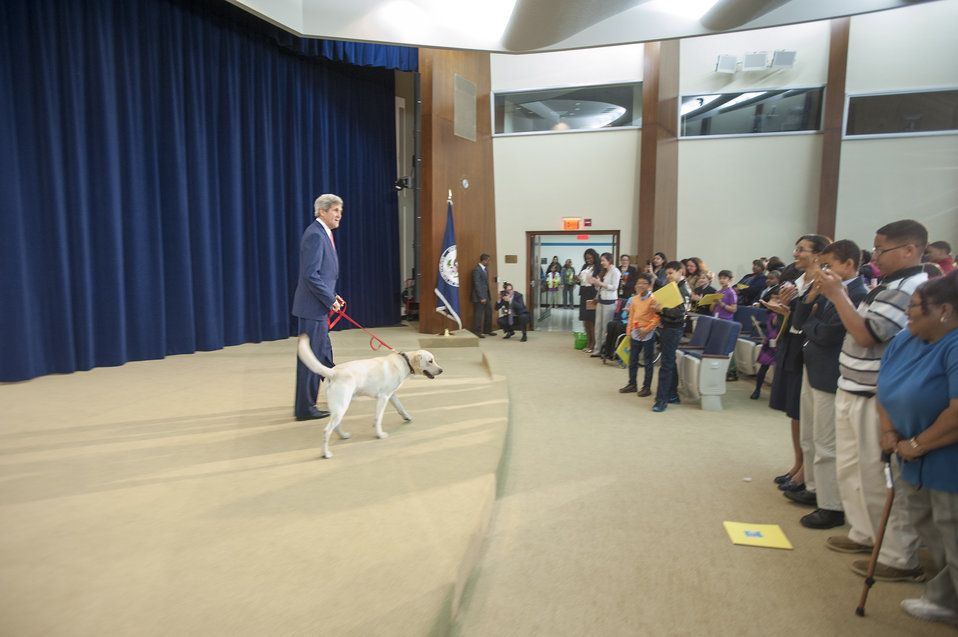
Secretary Kerry Introduces Ben to Children at Take Your Child to Work Day

U.S. Secretary of State John Kerry, with his beloved dog Ben, speaks with children at the U.S. Department of State's annual Take Your Child to Work Day Event in Washington, D.C., on April 24, 2014.